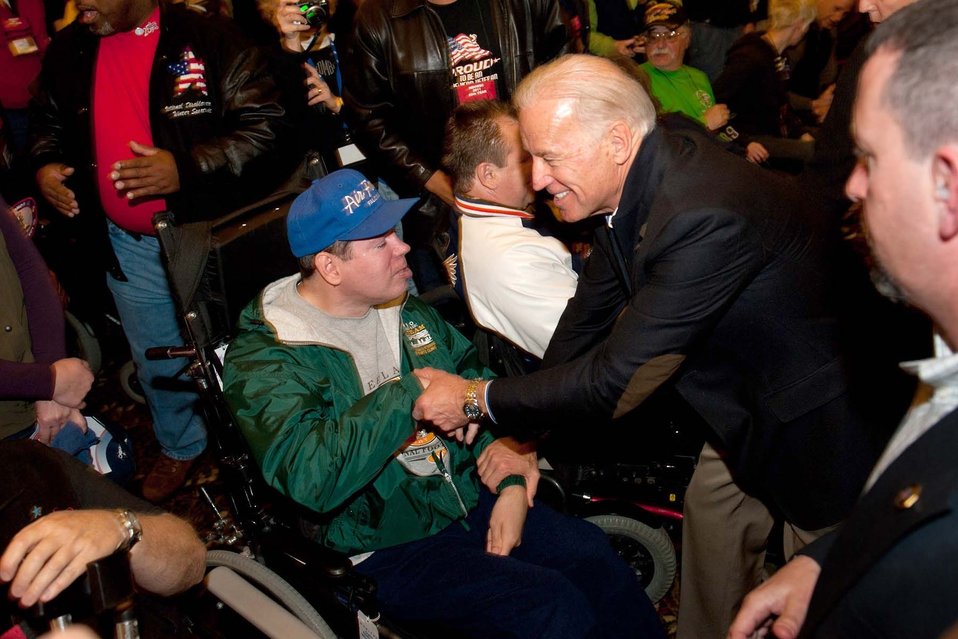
Disabled veterans sports clinic opens in Colorado

Vice President Joe Biden greets a participant at the opening ceremonies for the 25th National Disabled Veterans Winter Sports Clinic March 27, 2011, in Snowmass Village, Colo.